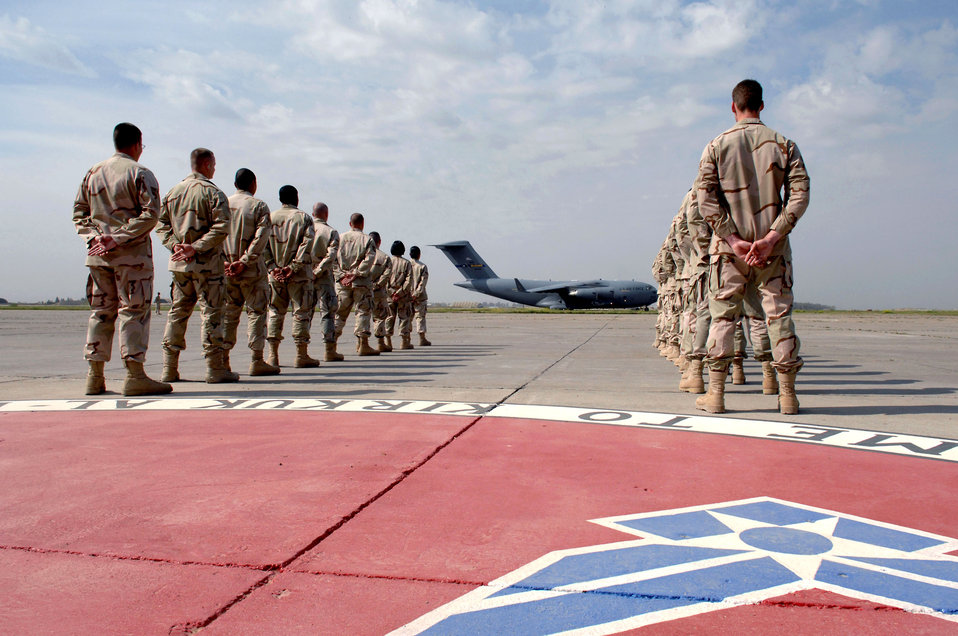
SECAF visits Airmen at Kirkuk

Secretary of the Air Force Michael W. Wynne arrives on a C-17 Globemaster III as Airmen of the 506th Air Expeditionary Group await his arrival March 28 at Kirkuk Air Base, Iraq.